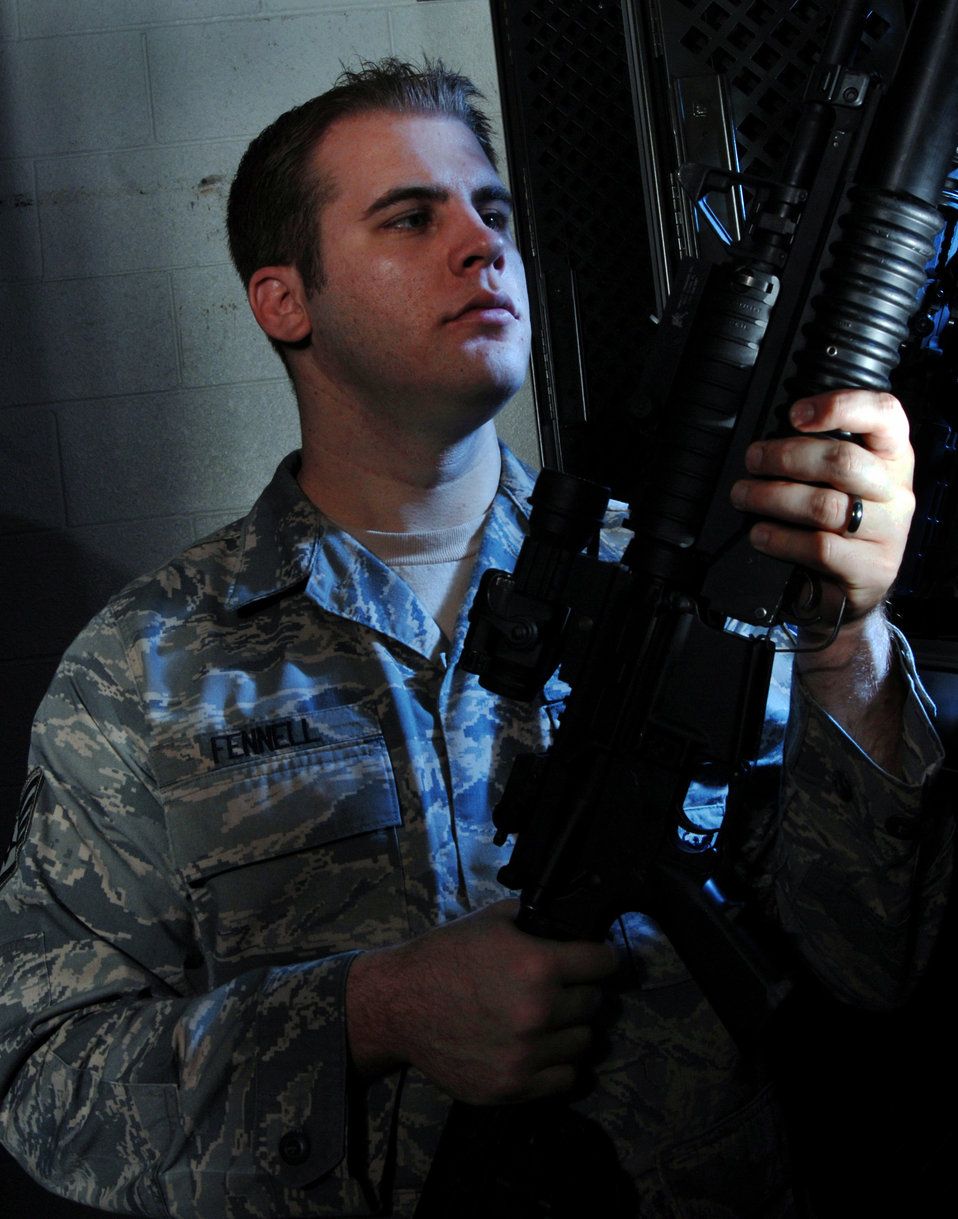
force protection

Staff Sgt. Andrew Fennell visually inspects the M-68 scope on a 5.56 mm M-4 carbine rifle at the armory at March Air Reserve Base, Calif., on Feb. 28. The 452nd SFS provides force protection programs to include weapon system security, police services, resource protection and antiterrorism for the 452nd Air Mobility Wing at March ARB. They also maintain a wartime and contingency rapid deployment capability to conduct force protection operations worldwide. Sergeant Fennell is an armorer from the 452nd Security Forces Squadron.